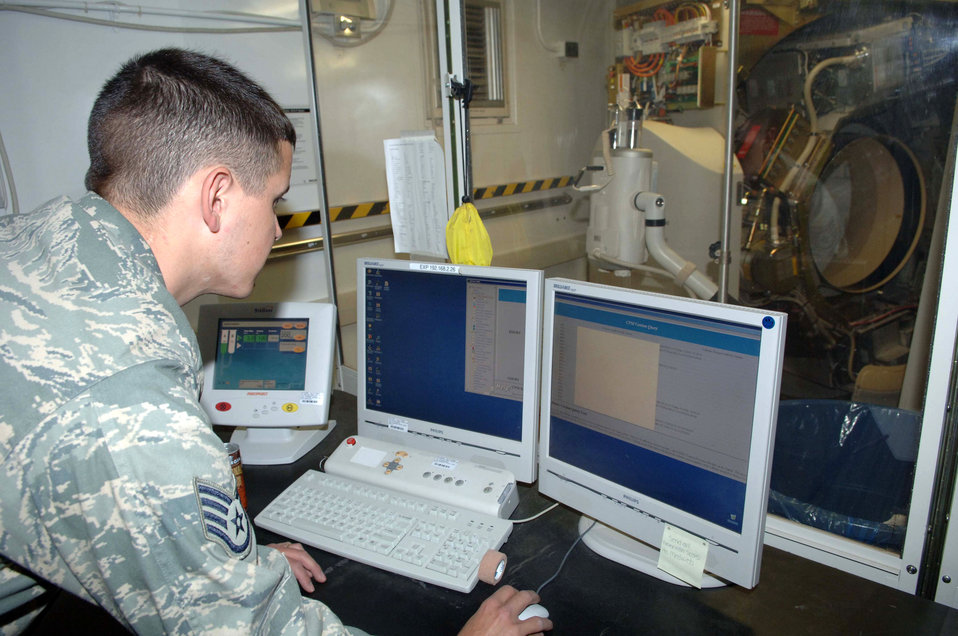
They'll get your motor running

Staff Sgt. Orlando Ortega uses a computer to troubleshoot a computerized tomography machine Dec. 31 at the Air Force Theater Hospital at Balad Air Base, Iraq. Sergeant Ortega is a 332nd Expeditionary Medical Support Squadron biomedical equipment technician deployed from Barksdale Air Force Base, La.